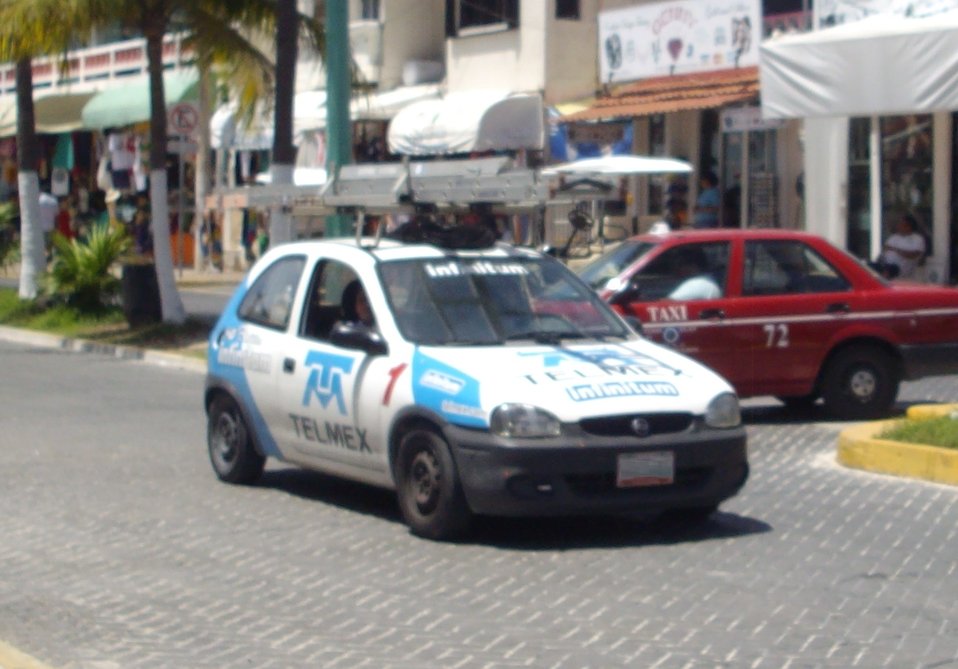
2001-2003 Chevrolet Chevy Telmex photographed in Cancun, Quintana Roo, Mexico.